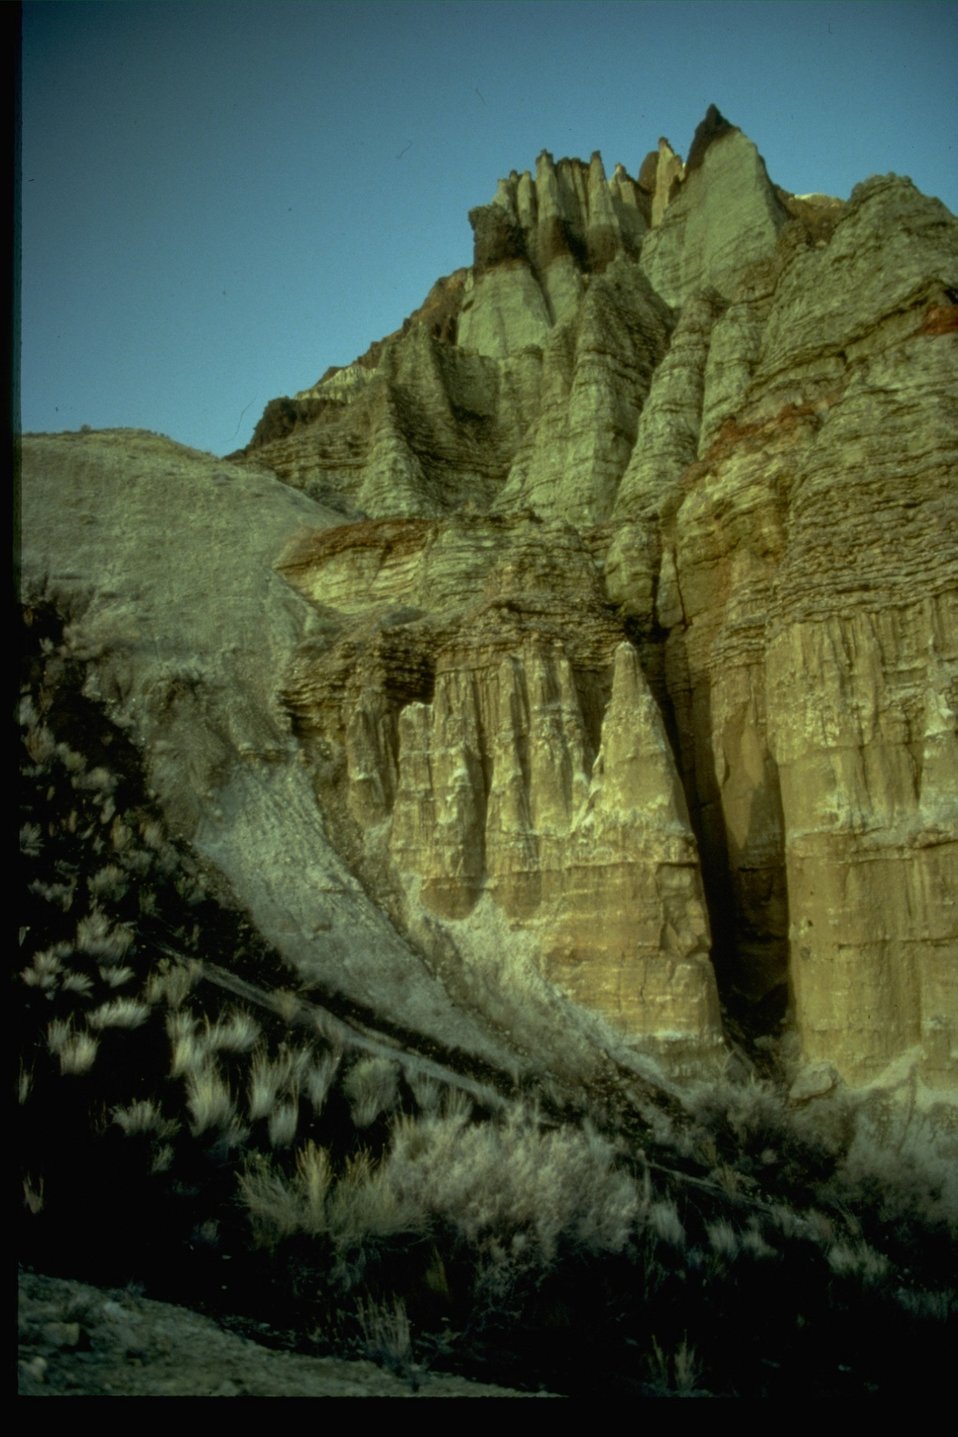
The Chuck Basin in the Lower Owyhee Canyon Wilderness Study Area. OR 3-110.